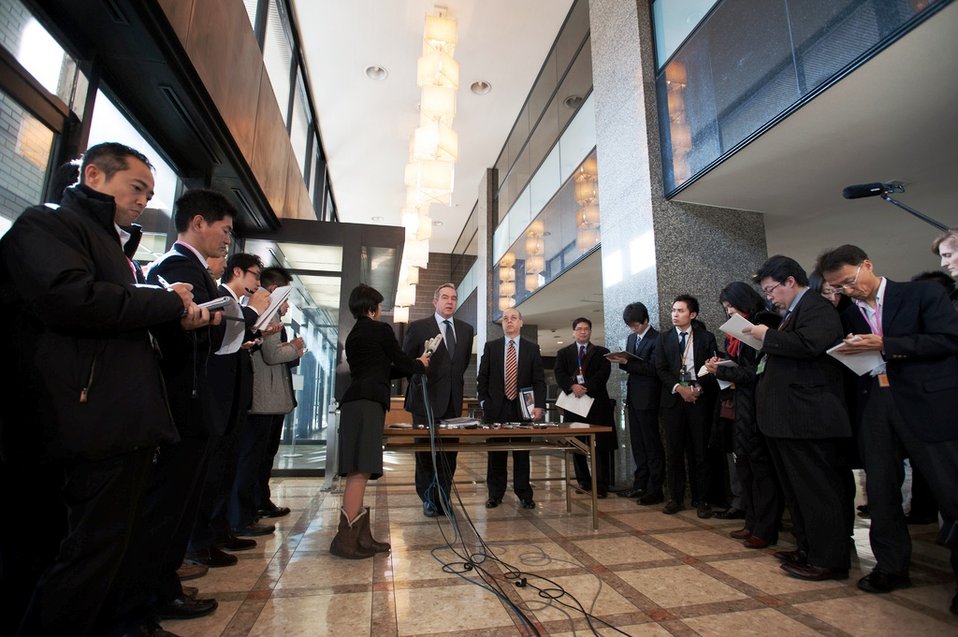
Assistant Secretary Campbell and National Security Council Senior Director Russel Address Reporters

Assistant Secretary of State for East Asian and Pacific Affairs Kurt M. Campbell and National Security Council Senior Director for Asian Affairs Daniel Russel address the Tokyo media after their meeting at the Ministry of Foreign Affairs in Tokyo, Japan, January 17, 2013.